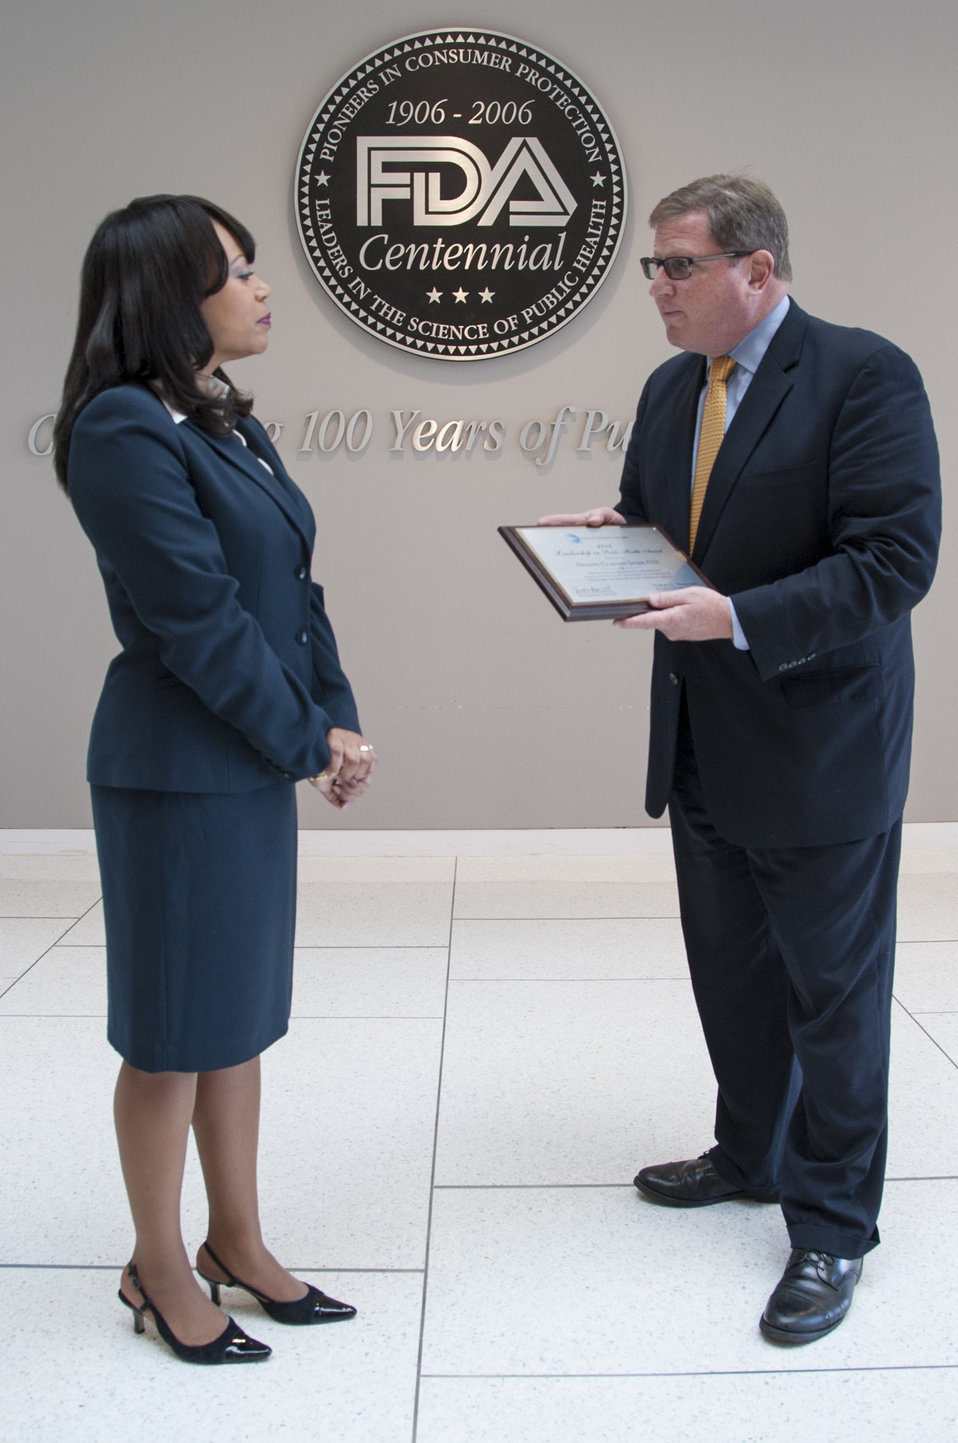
AOA Leadership Award - 9840

Nov. 18, 2013; Dr. Helene Clayton-Jeter (left) accepted The American Optometric Association (AOA) 2013 Leadership in Public Health Award from AOA Director Jon Hymes, for her hard work and success in advancing innovative and effective public health policy solutions, and for helping safeguard the health of the American people.

For more information on Helene's award, read this FDA Voice blog post: blogs.fda.gov/fdavoice/index.php/2013/12/a-vision-worth-h...

This photo is free of all copyright restrictions and available for use and redistribution without permission. Credit to the U.S. Food and Drug Administration is appreciated but not required. Privacy and use information: www.flickr.com/people/fdaphotos/